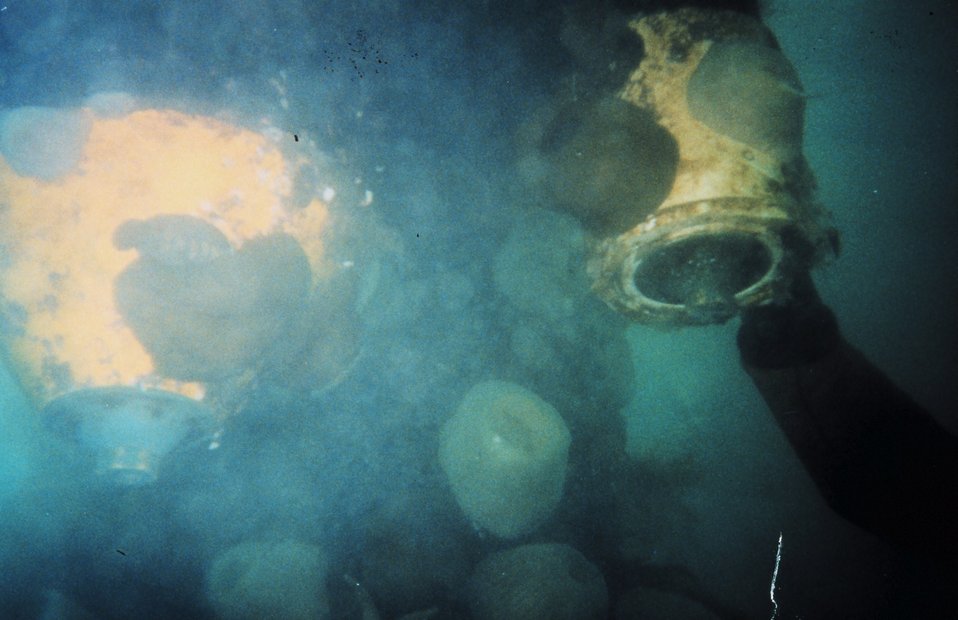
Inspecting the Cherry Point tide gage orifices.